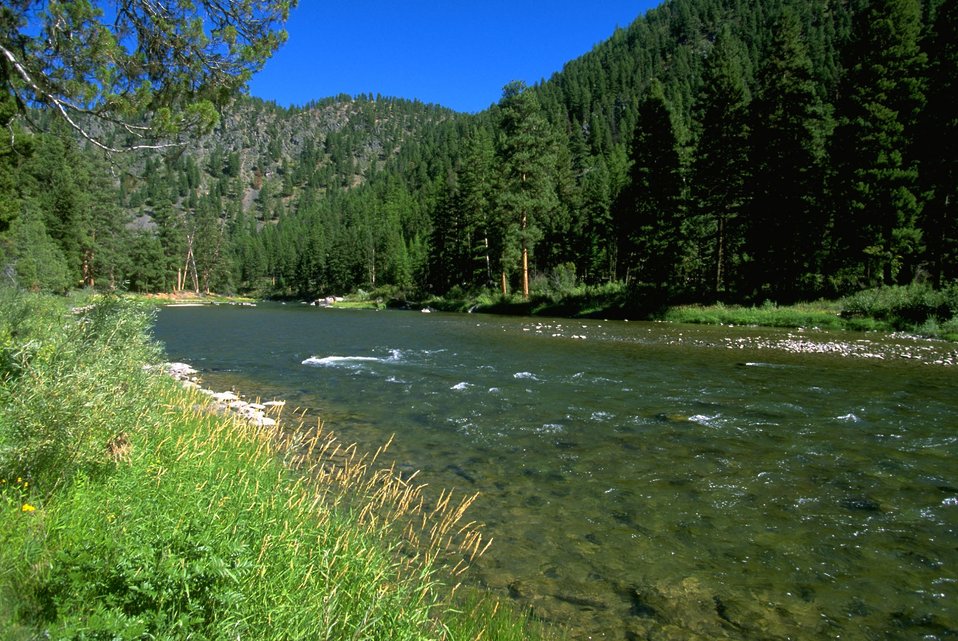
Scenic shot of Blackfoot River